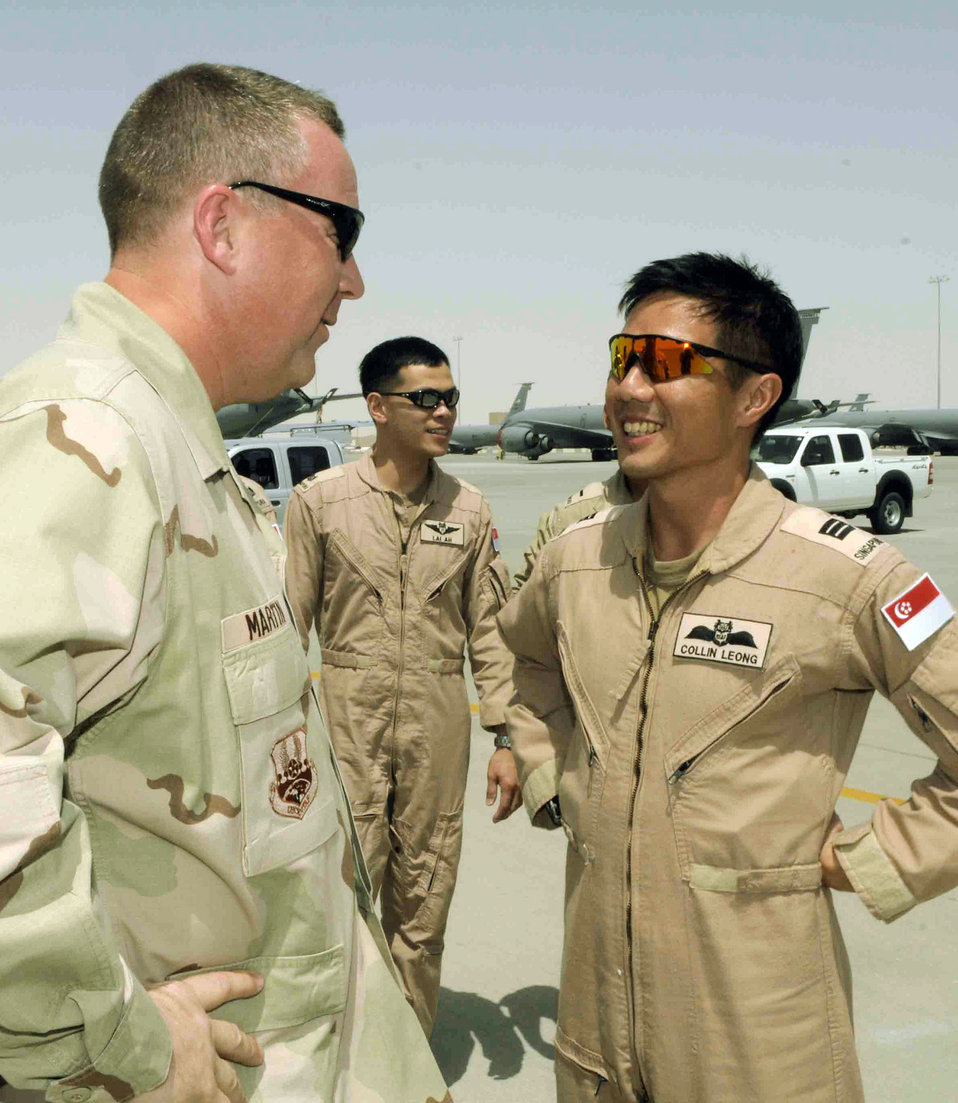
Singapore aircraft signals strong coalition relationship

Col. Larry Martin welcomes Singapore air force Capt. Colin Leong April 16 to a Southwest Asian air base. Colonel Martin is the 379th Air Expeditionary Wing vice commander, and Captain Leong is a Singapore air force KC-135 pilot.